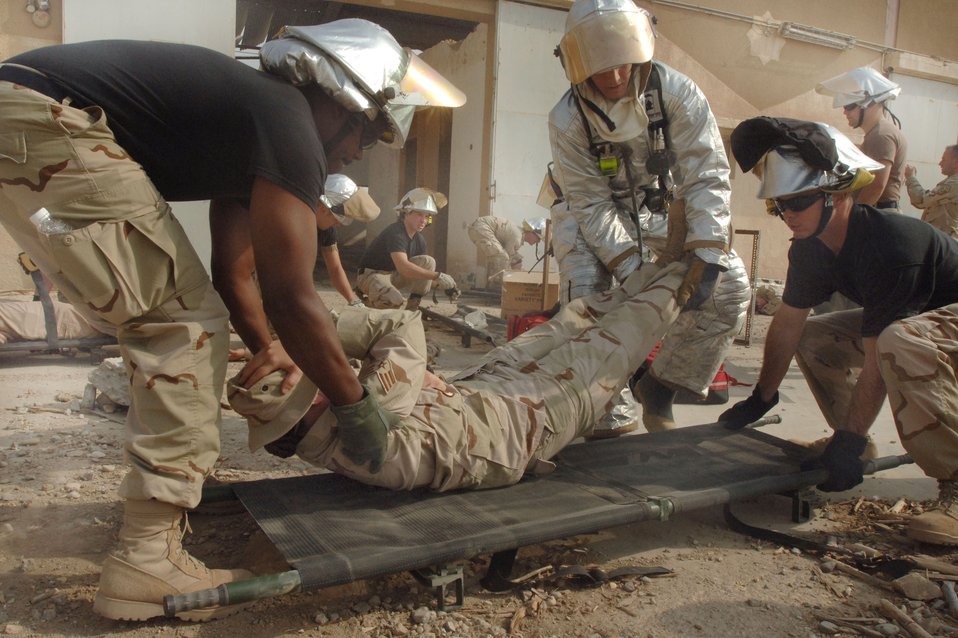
Operation Iraqi Freedom

ALI BASE, Iraq -- Senior Airman Donnie Rogers (left), Airman Micheal Delong (center) and Airman 1st Class Robert Jacobs put a mock patient on a stretcher during a mass casualty fire alert exercise here. The Airmen are deployed here to the 407th Expeditionary Civil Engineer Squadron fire department. Airman Rogers is from the 4th Civil Engineers Squadron at Seymour Johnson Air Force Base, N.C.; Airman Delong from the 28th CES at Ellsworth AFB, S.D.; and Airman Jacobs from the 60th CES at Travis AFB, Calif. The training exercise, which simulated a mass casualty fire alert, will help prepare firefighters here for real-world events.